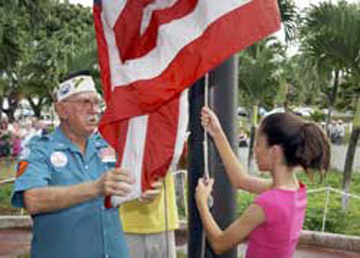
Pearl Harbor survivor remembers

Retired Master Sgt. Richard Fiske receives a helping hand from Erica Solomon in raising the colors at the USS Arizona Memorial visitor center in Honolulu, Hawaii, in 2001. The Pearl Harbor survivor volunteered at the center as a goodwill ambassador for more than 20 years.